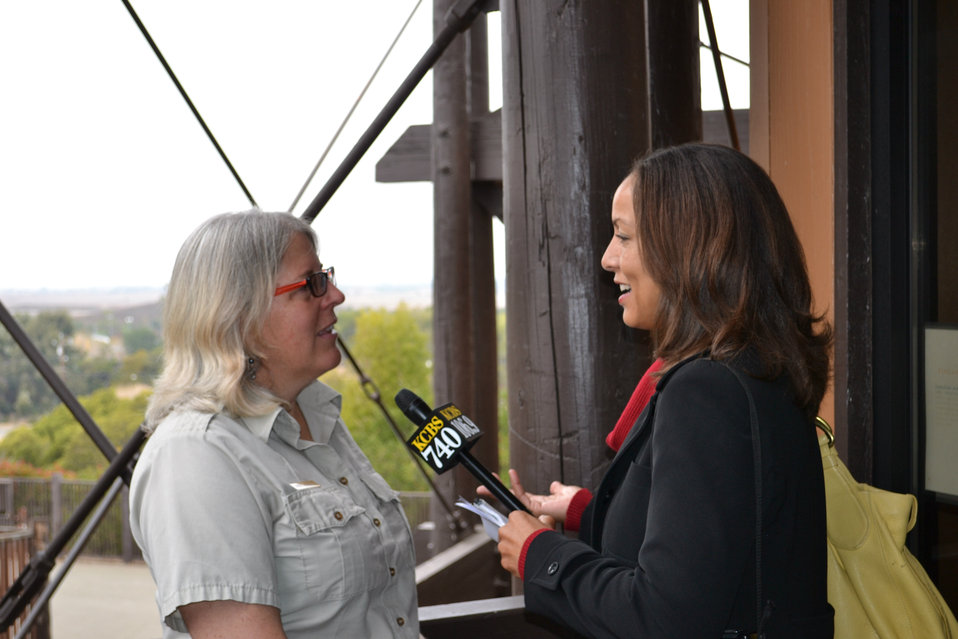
Anne Morkill & Anna Duckworth, KCBS radio, TMRP-11-14-13

Photo credit: Doug Cordell/USFWS

Anne Morkill, SF Bay NWR Refuge Complex Manager tells how restoration work at the area refuges fits into the plan.

The U.S. Fish and Wildlife Service was joined by the California Department of Fish and Wildlife, the Coastal Conservancy, and many other environmental organizations active in the Bay Area to celebrate the finalization of the Recovery Plan for Tidal Marsh Ecosystems in Northern and Central California.